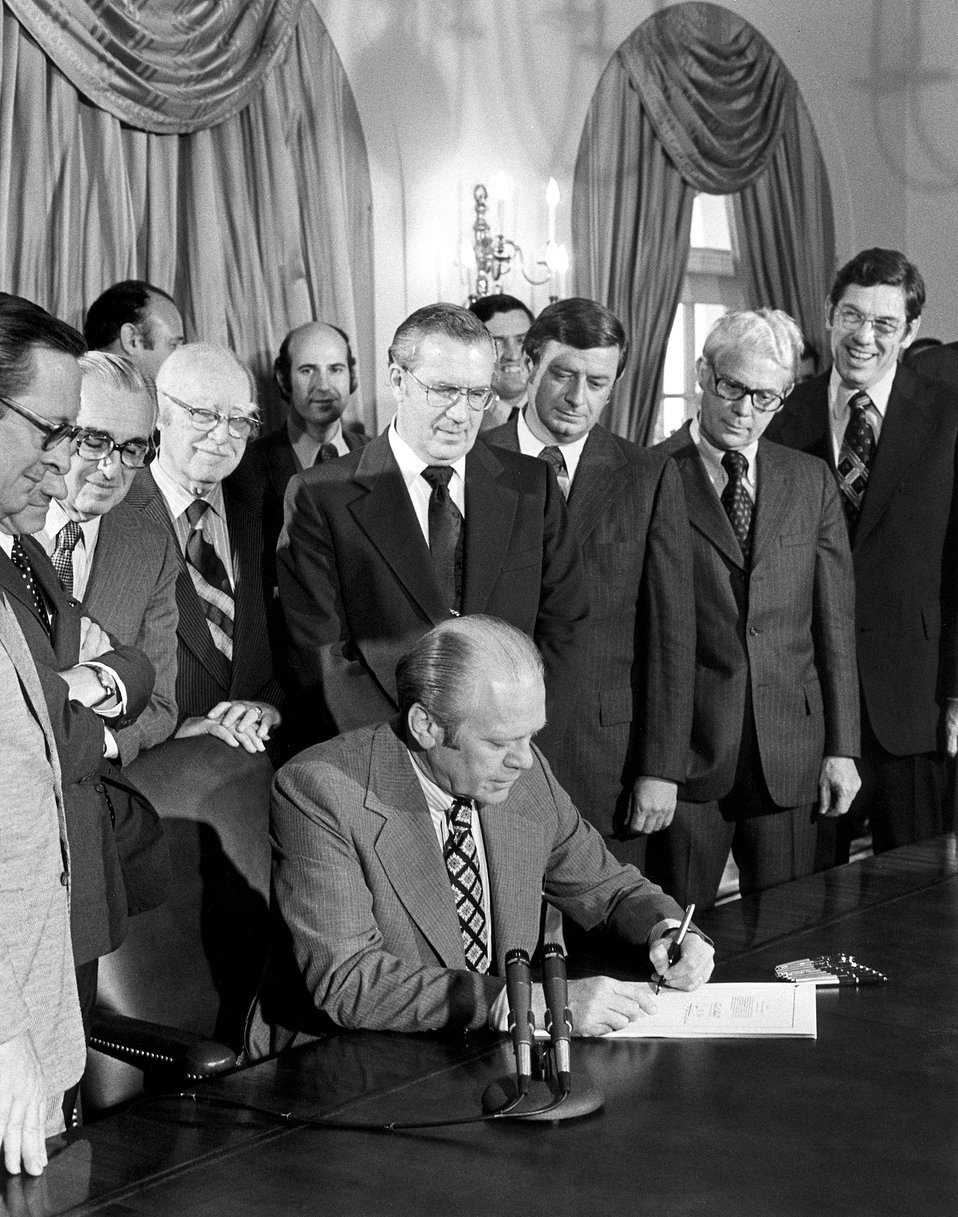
President Gerald R. Ford signing the Energy Reorganization Act of 1974 at the White House October 11, 1974.